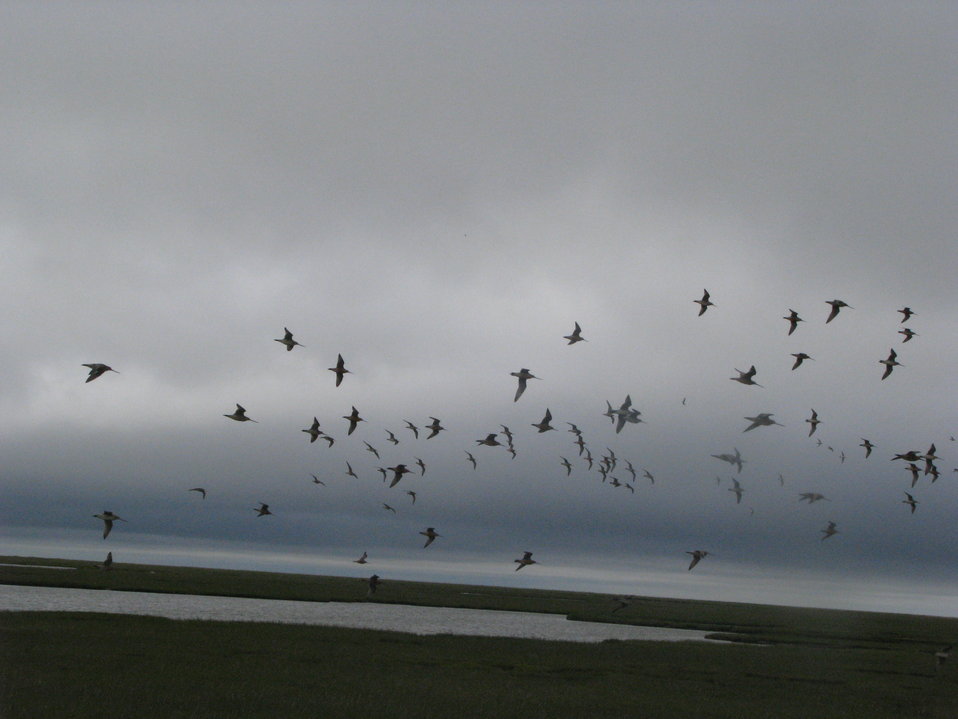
Flock of Sandpipers

Yukon Delta NWR